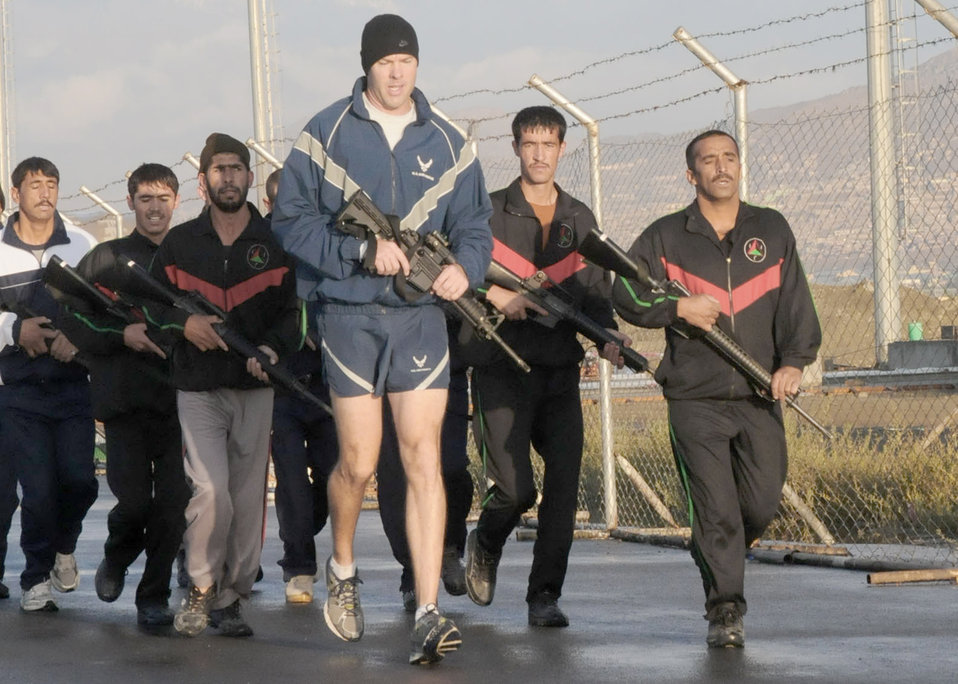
Afghan air force members attend fly-away security team training

Afghan air force security forces members engage in physical fitness with Capt. Robert Shaw Sept 30, 2010, in Kabul, Afghanistan. Captain Shaw is the NATO Air Training Command - Afghanistan adviser.